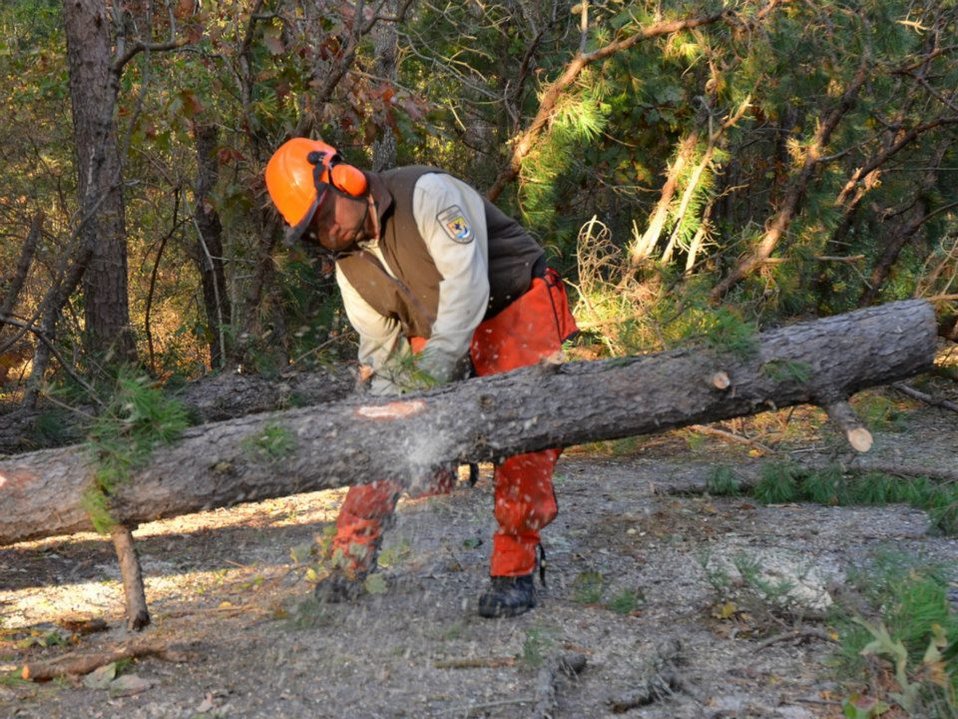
Trail clearing at Edwin B. Forsythe National Wildlife Refuge after Hurricane Sandy (NJ)

Maintenance worker Roger Dutch has been busy clearing dozens of trees and overhanging hazards from refuge trails.